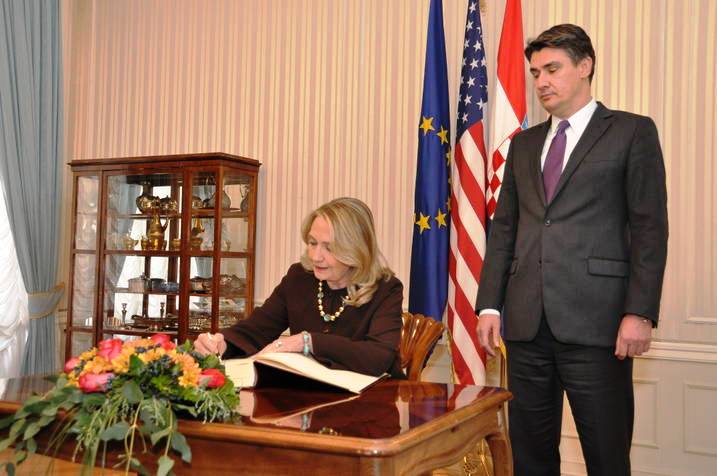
Secretary Clinton Signs the Guestbook

U.S. Secretary of State Hillary Rodham Clinton signs the guestbook at the office of Croatian Prime Minister Zoran Milanovic in Zagreb, Croatia, October 31, 2012.